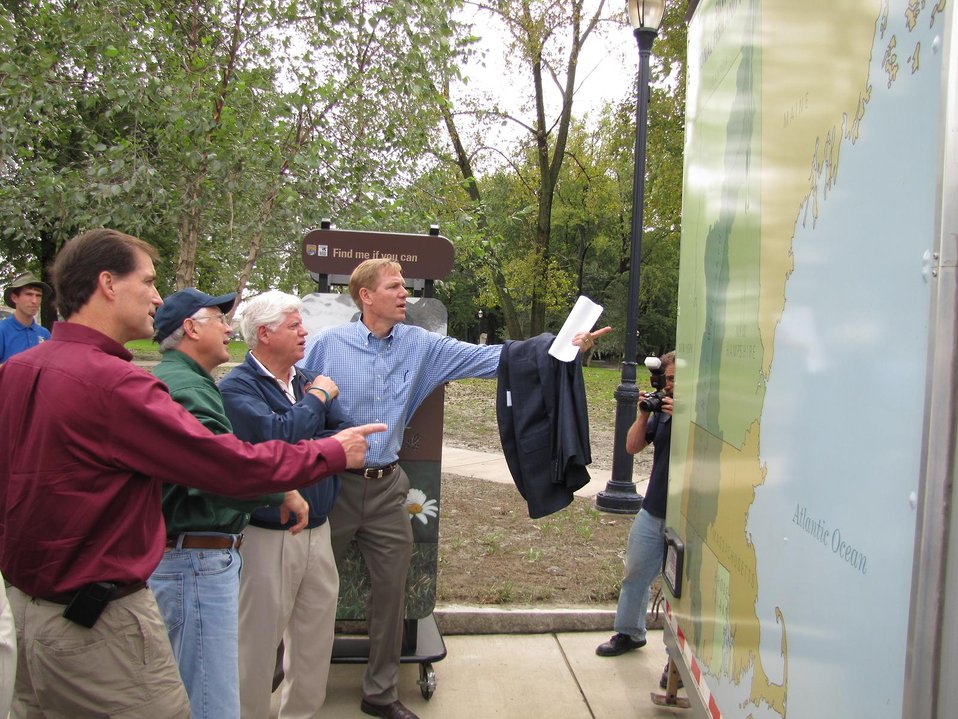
WoW Express and Secretary Salizar

Director of the U.S. Fish and Wildlife Service Dan Ashe, The Secretary of the Department of the Interior Ken Salizar, Representative John Larson, and Couselor to the Secretary Will Shafroth, appear to be actively planning out strategy for the Silvio O. Conte National Fish and Wildlife Refuge.